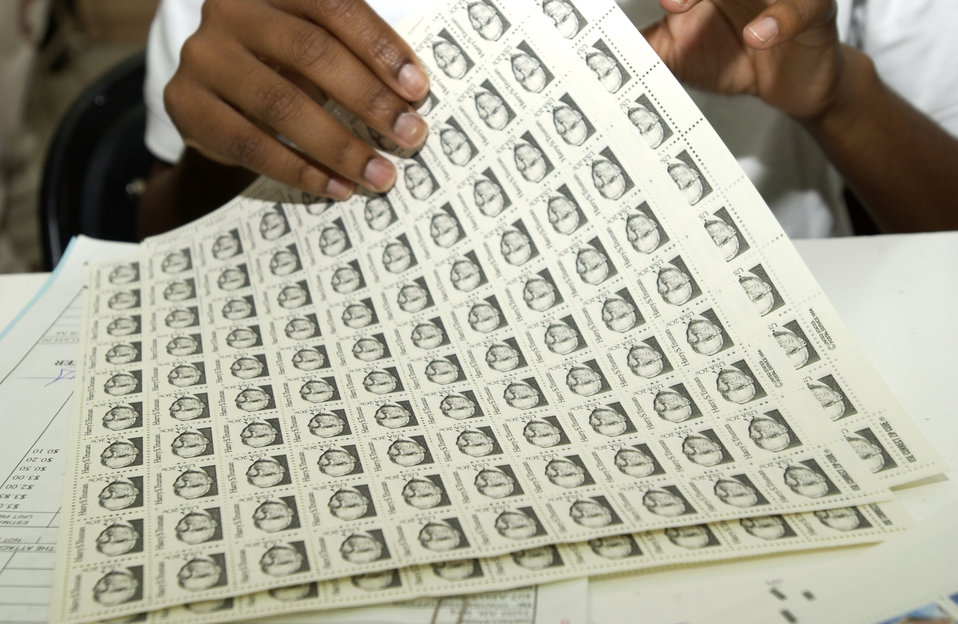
Being prepared

TALLIL AIR BASE, Iraq -- Senior Airman Erica Thayer counts stamps purchased and transported here by contracting personnel from Kuwait City, May 14. Airman Thayer is assigned with the 407th Expeditionary Contracting Squadron.